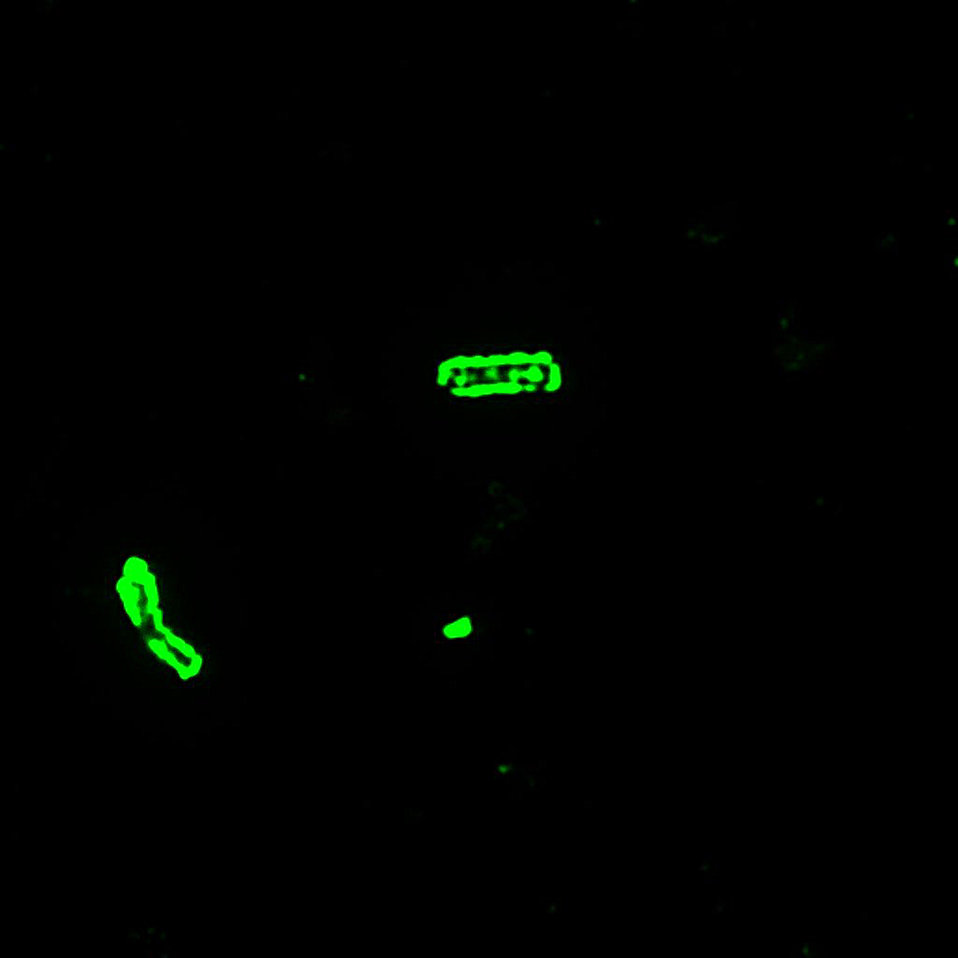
B. anthracis Direct Fluorescent Antibody (DFA) capsule stain.